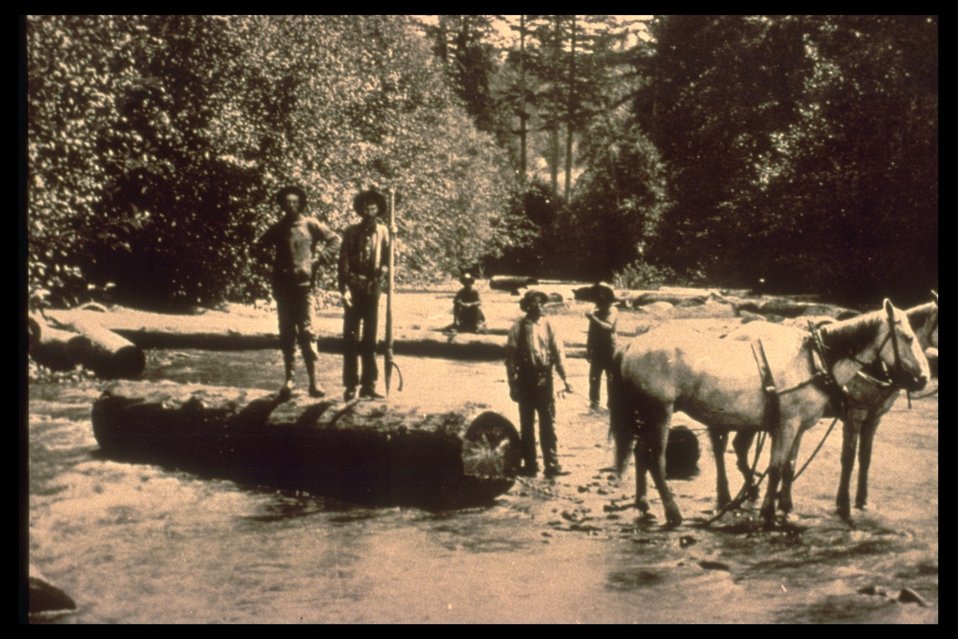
Black and white photo of loggers in stream with horses pulling a log.